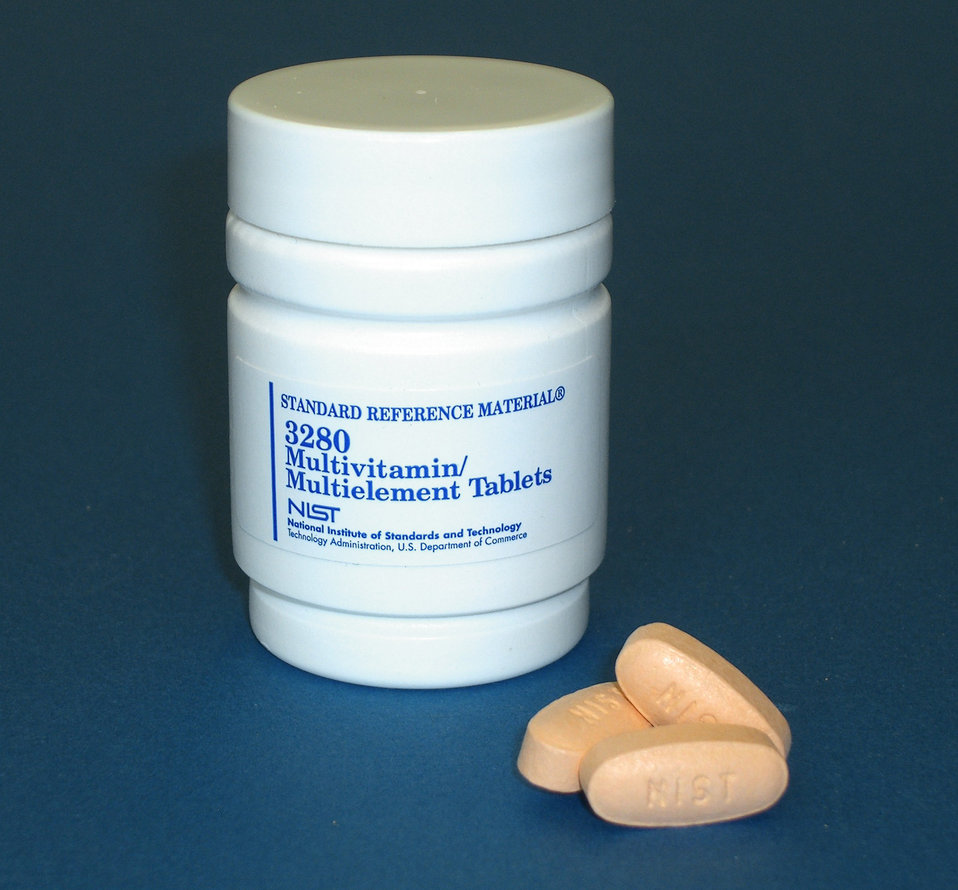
New Reference Material Can Improve testing of Multivitamin Tablets

NIST has developed a new certified reference material that can be an important quality assurance tool for measuring the amounts of vitamins, carotenoids, and trace elements in dietary supplements. SRM 3280 is part of a larger ongoing effort the NIST group has undertaken to develop reference materials for fatty acids, caffeine, and a whole host of other dietary supplements.